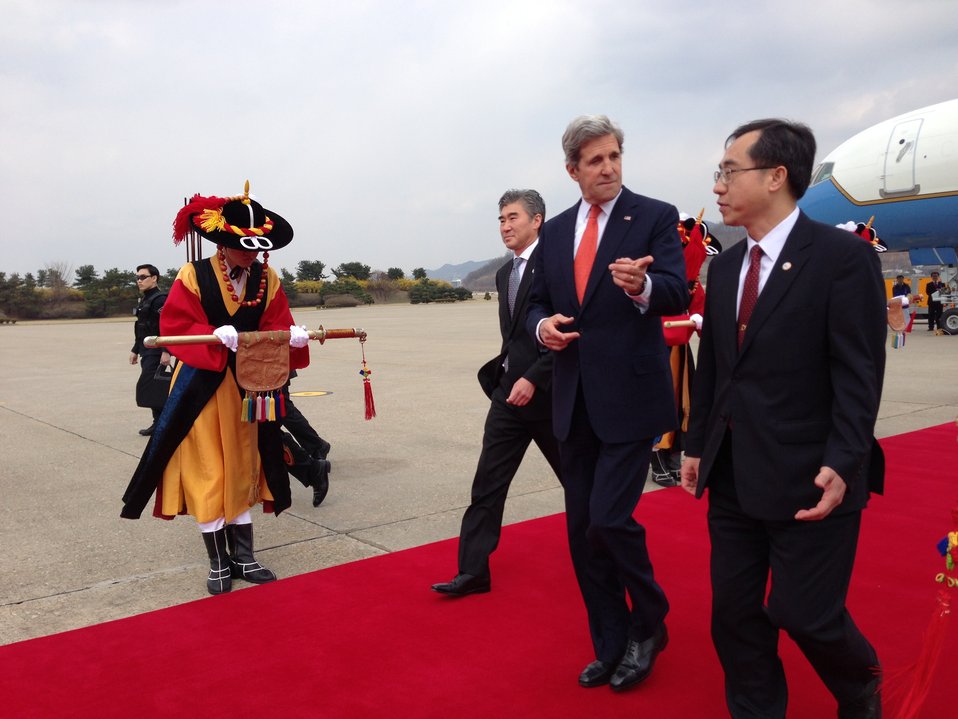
Secretary Kerry is Escorted by Moon Seoung-hyun

U.S. Secretary of State John Kerry is escorted by Moon Seoung-hyun, Deputy Director General of the Ministry of Foreign Affairs for North America, and accompanied by U.S. Ambassador to South Korea Sung Kim upon his arrival in Seoul, South Korea, on April 12, 2013.